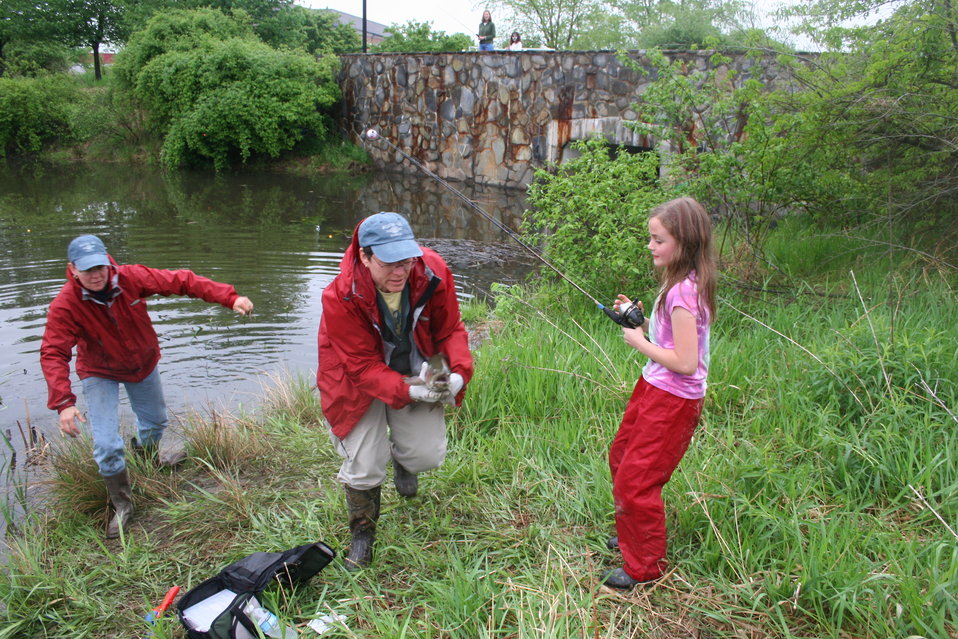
Fishing event at U.S. Fish and Wildlife Service Regional Office in Hadley, MA